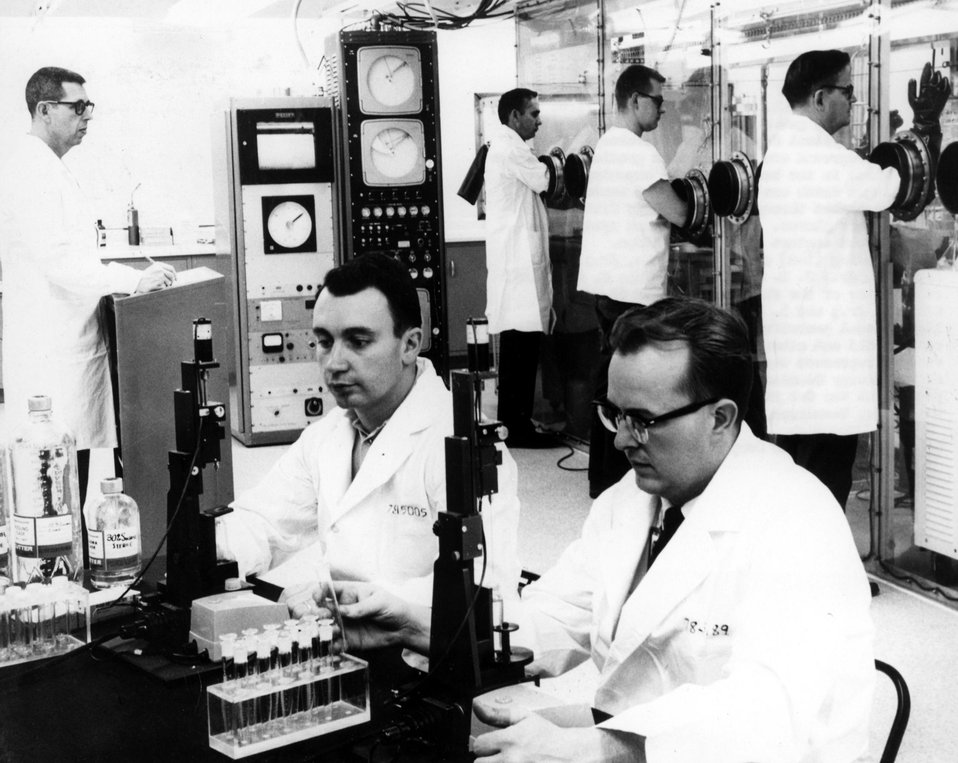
Oak Ridge's new virus isolation facility gets a final check-out by the staff of the Biophysical Separation Laboratory. The men in the foreground are working with gradient analyzers while those in the background are checking the centrifuges which are located within containment boxes reachable through special ports fitted with large rubber gloves. c. 1965